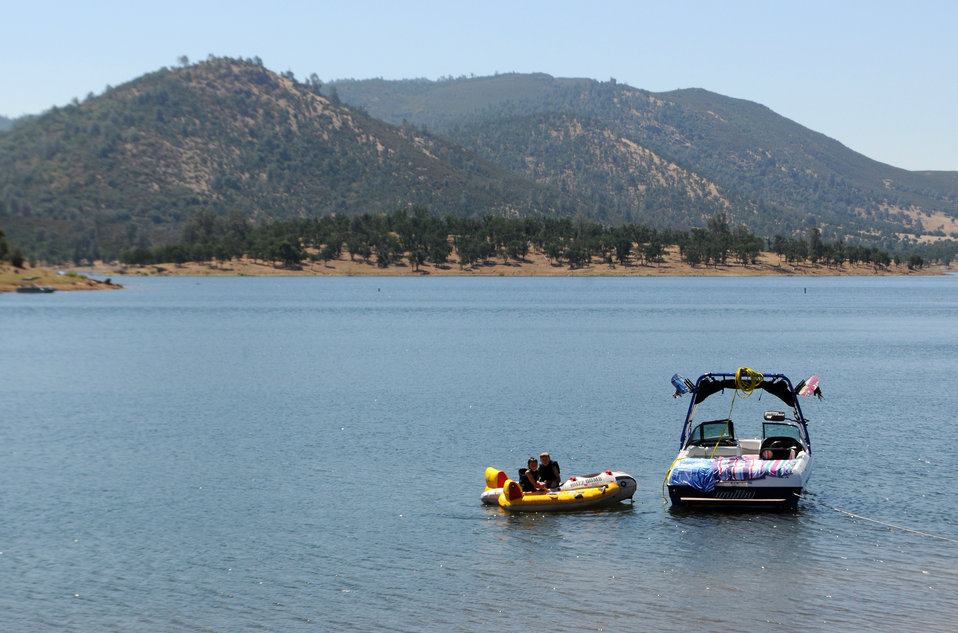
New Hogan Lake and Dam, Calaveras County, Calif.

A view of New Hogan Lake near Valley Springs, Calif., July 8. The 4,400 surface acre lake is located in the oak and brush-covered foothills of the Sierra Nevada Mountains and was created in 1964 with the completion of New Hogan Dam.

When full, the lake has 50 miles of shoreline and extends nearly eight miles upstream to the confluence of the north and south forks of the Calaveras River. The lake includes several campsites, boat ramps and other recreational activities open to the public.